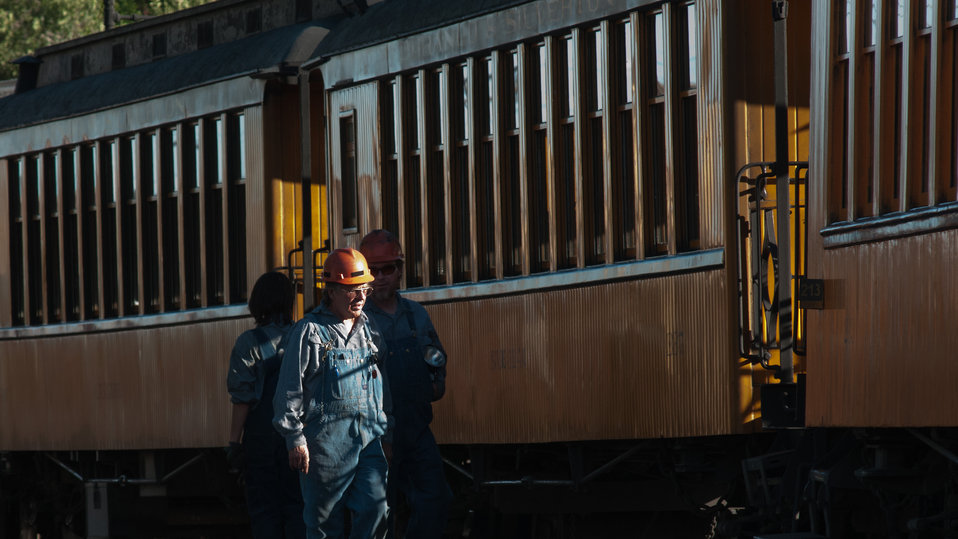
Durango, Colorado is in a historic mining area; now a destination location featuring the Durango & Silverton Narrow Gauge Railroad depot station and other economic providers. Natural resources surround the area. It is home to more than 17,000 people.